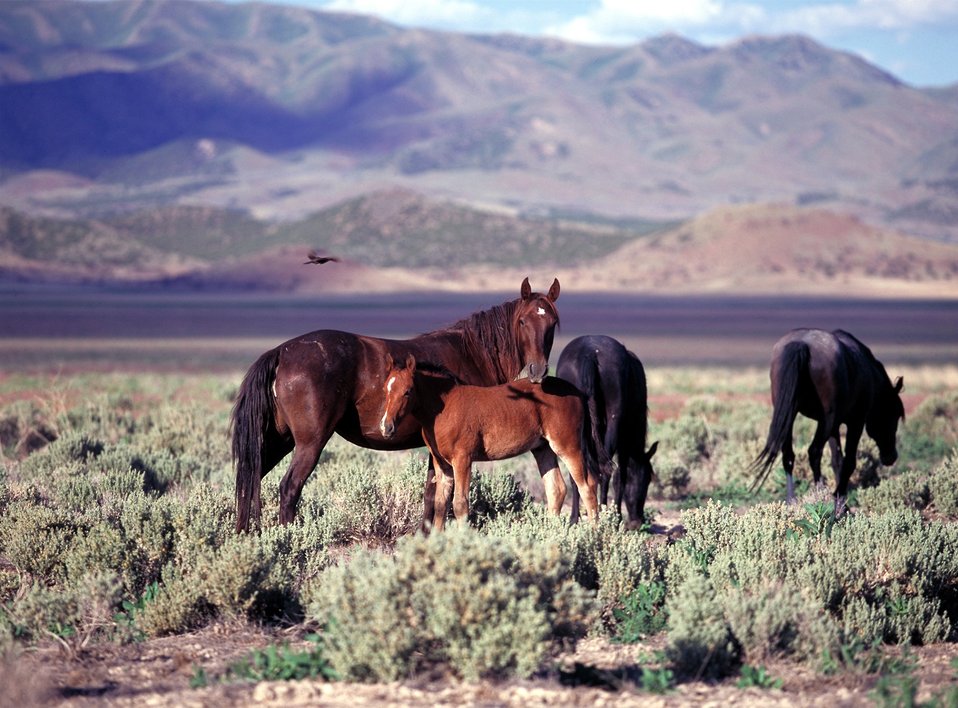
Onaqui Herd near Dugway, Utah.